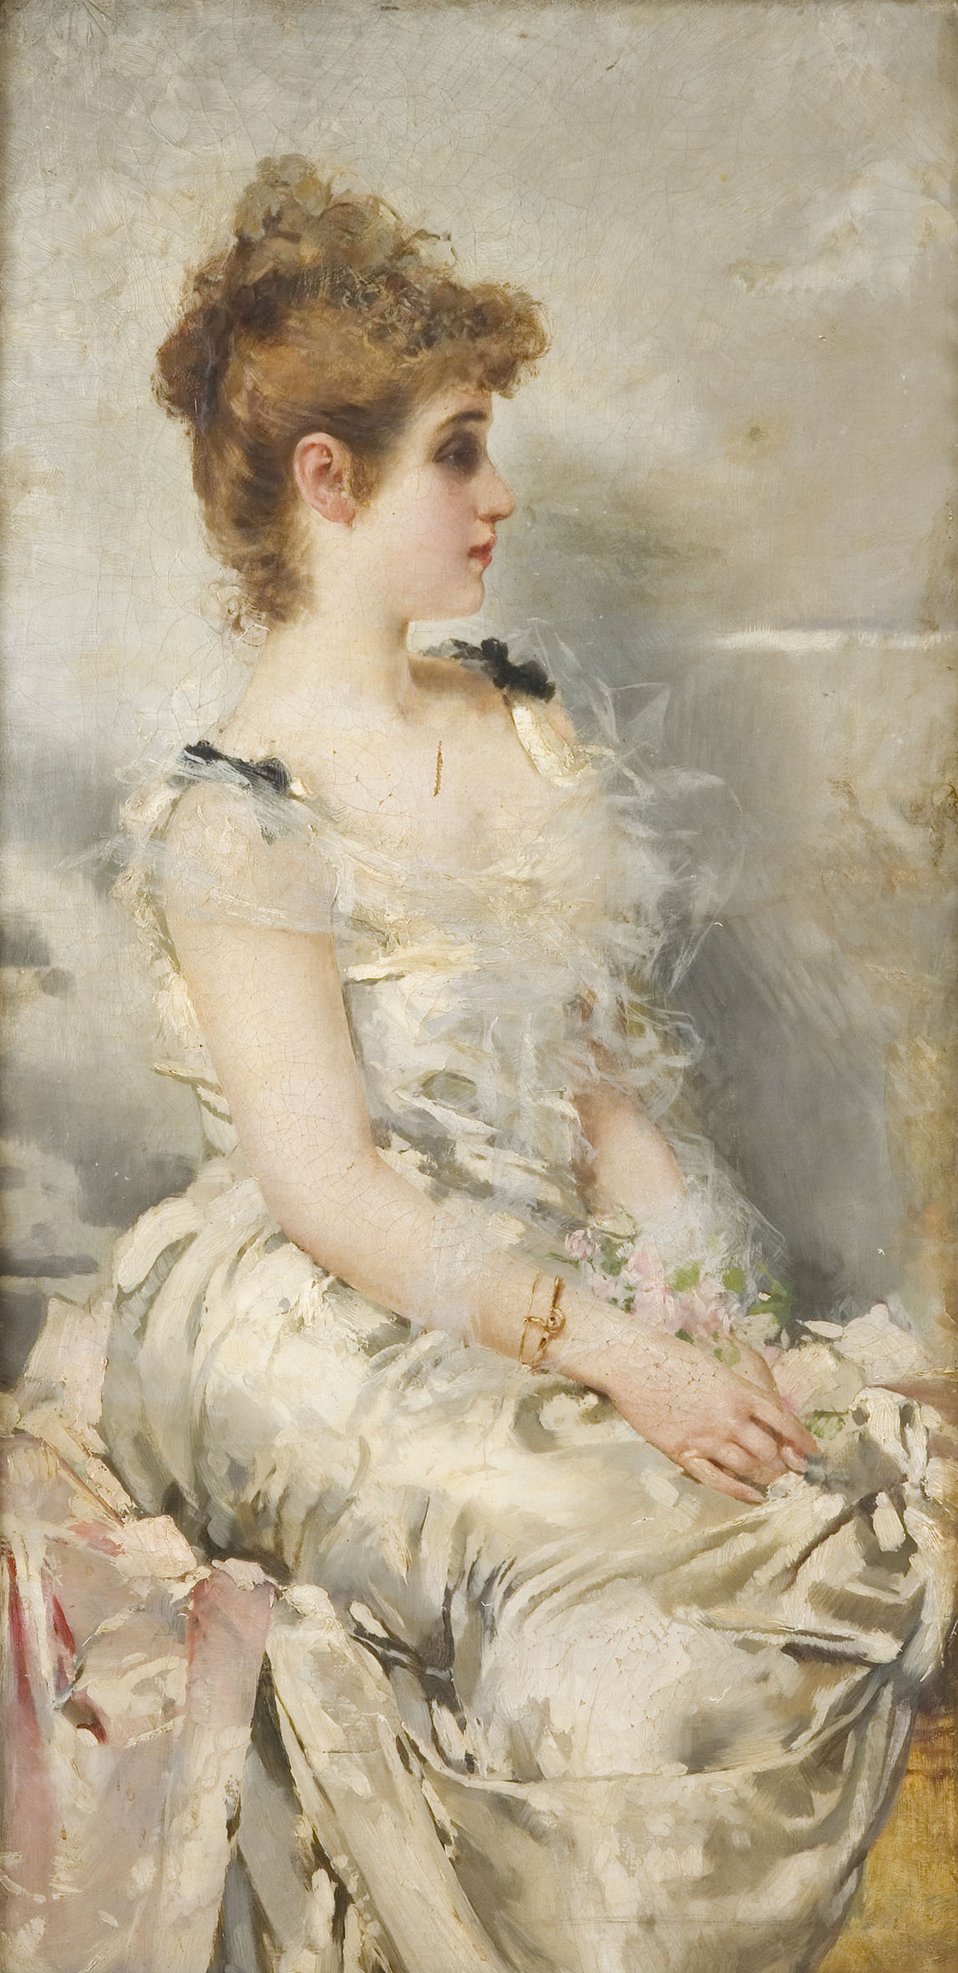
Français : Portrait de jeune femme, h/t, cm. 200 x 60, Coll. privée